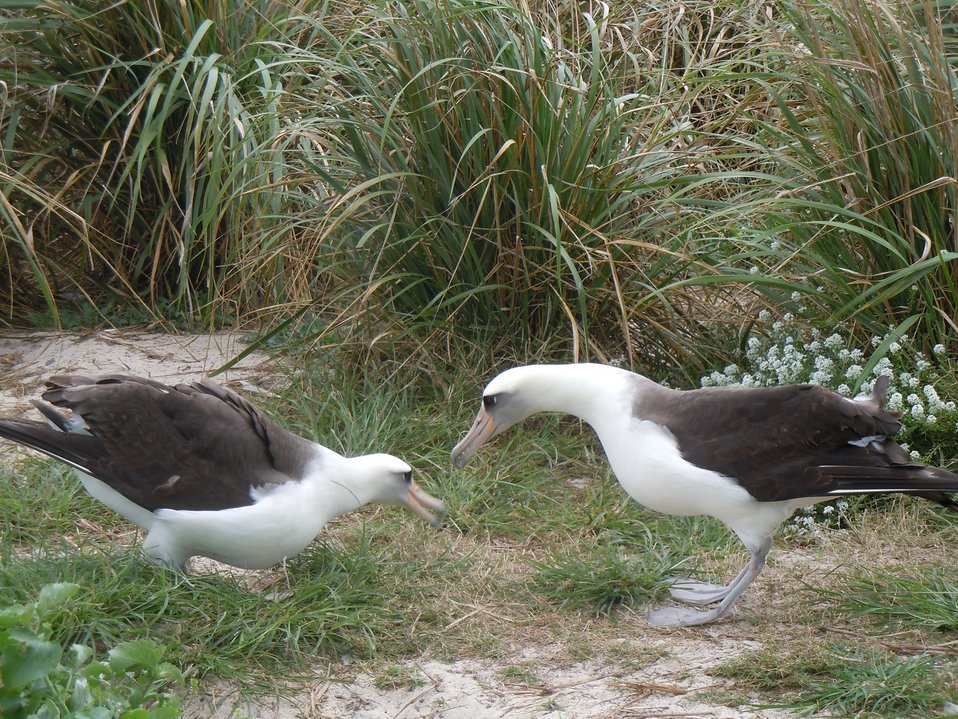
Laysan albatross courtship dance

Midway Atoll National Wildlife Refuge
March 2012